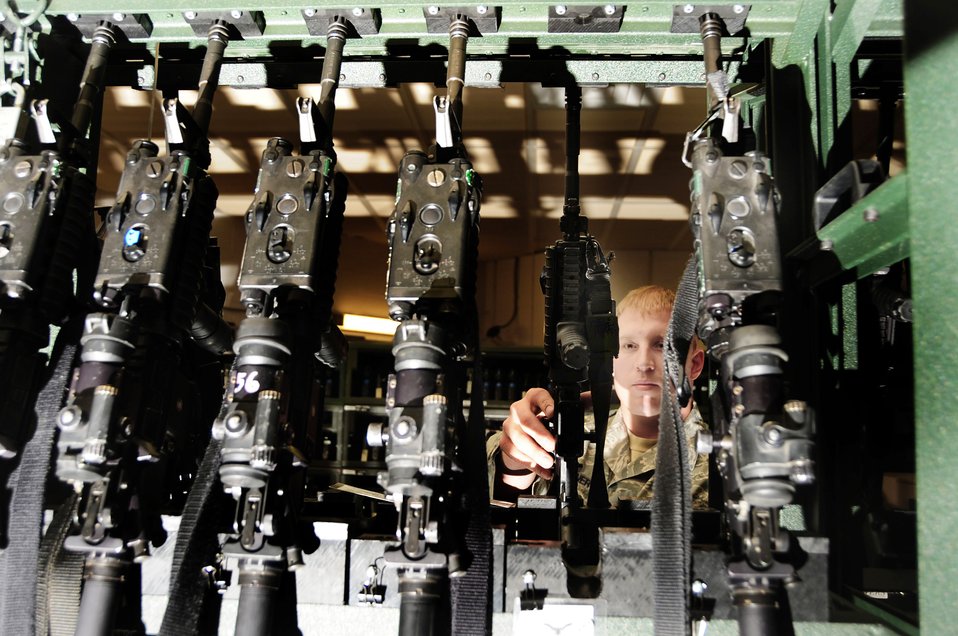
Air Guard rescue unit practices skills during exercise

Members of the 212th Rescue Squadron ready their equipment prior to responding to an urban search and rescue mission as part of the training exercise Vigilant Guard April 27, 2010, in Anchorage, Alaska. Vigilant Guard is an annual, disaster-based training scenario that tests the coordination of National Guard units with local, state, regional, and national disaster preparedness organizations.